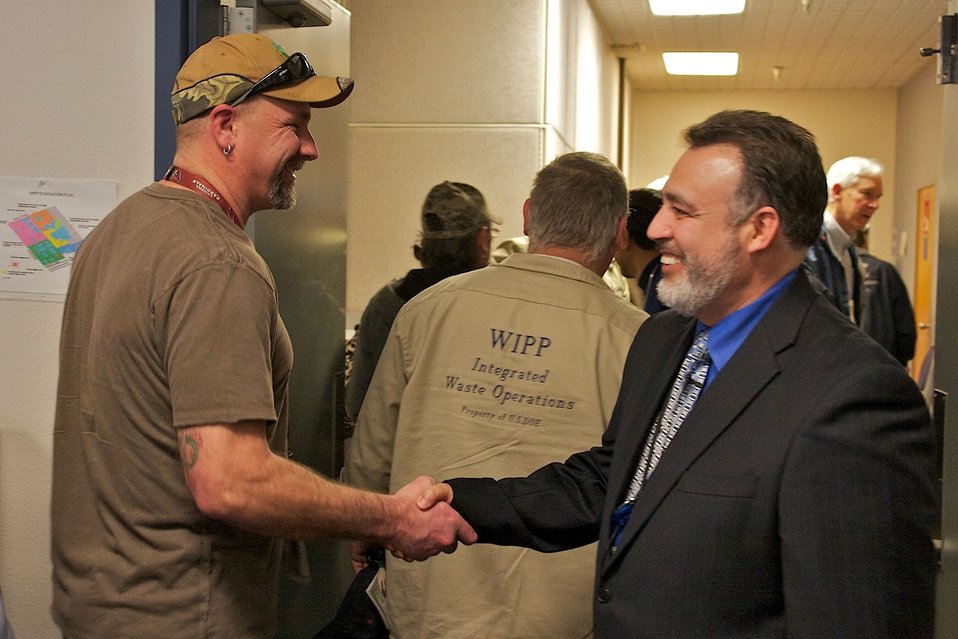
CBFO Manager Joe Franco Hits the Ground Running

Carlsbad Field Office Manager Joe Franco exchanges greetings with Mark Long, Jr., a Washington TRU Solutions LLC employee, at a WIPP Team All Hands in February. As a deep geologic repository for nuclear waste, “WIPP is” – as Franco emphasized to all - “America’s only and the world’s best.”